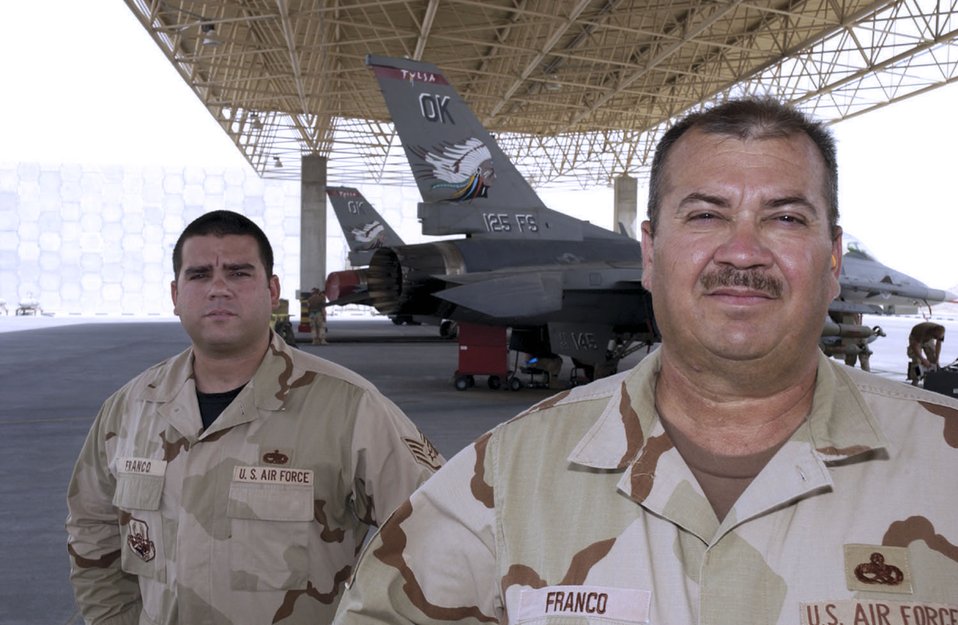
379th AMU fighter maintenance family affair

SOUTHWEST ASIA -- Senior Master Sgt. Joe Franco (foreground) and Staff Sgt. Joe Franco take a moment in between maintenance jobs. The father and son are assigned to the 379th Expeditionary Aircraft Maintenance Squadron at a forward-deployed location and are from the Oklahoma Air National Guard's 138th Fighter Wing.